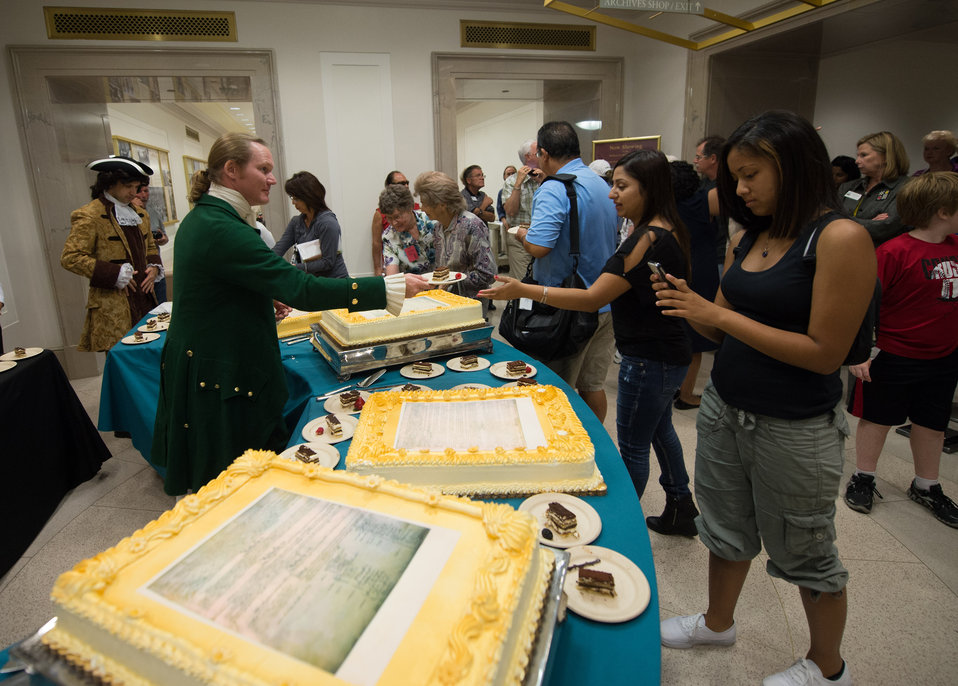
Taking a picture

A guest takes a picture of the Counstitution Day birthday cake